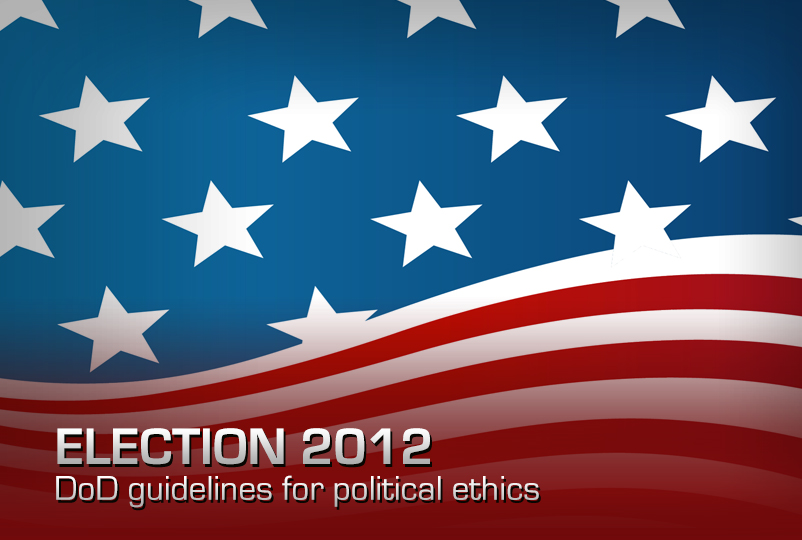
Election 2012